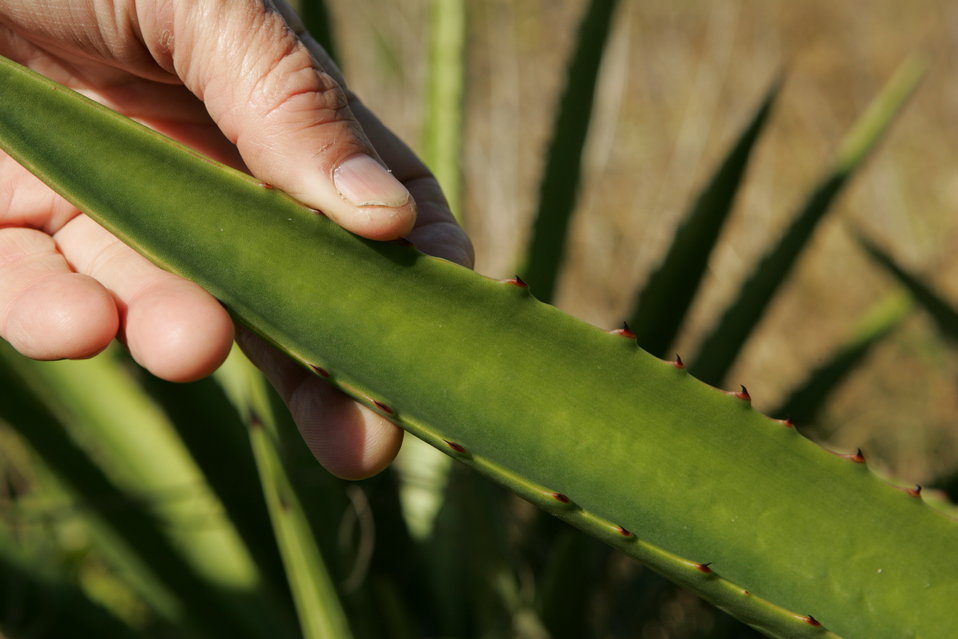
Aloe plant leaf

Hand holding aloe plant leaf to show spines on edges.